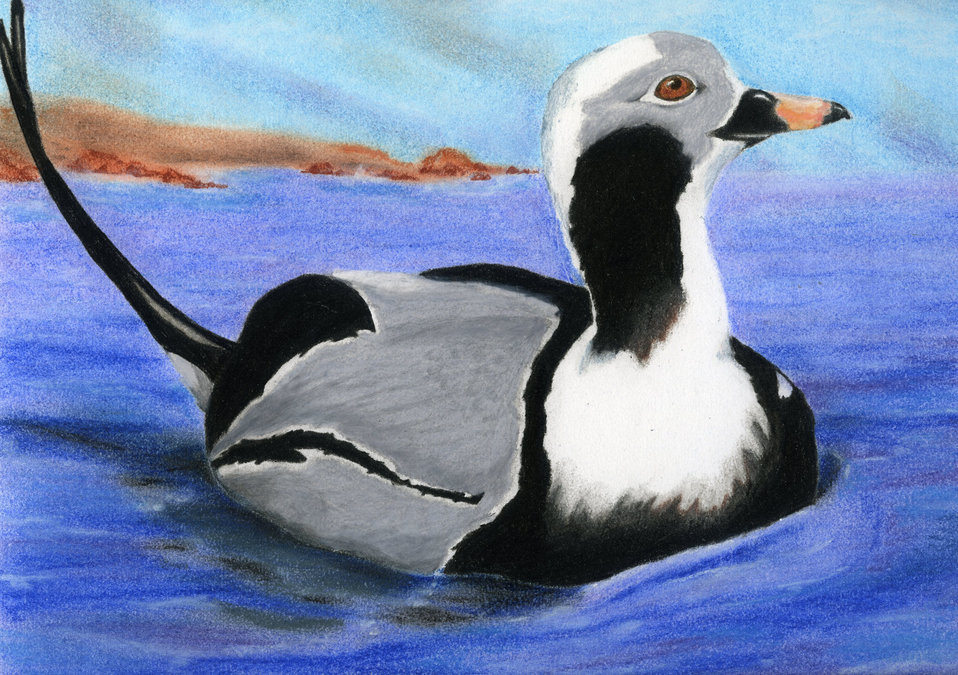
12NewMexico

2012 Junior Duck Stamp Best of Show New Mexico